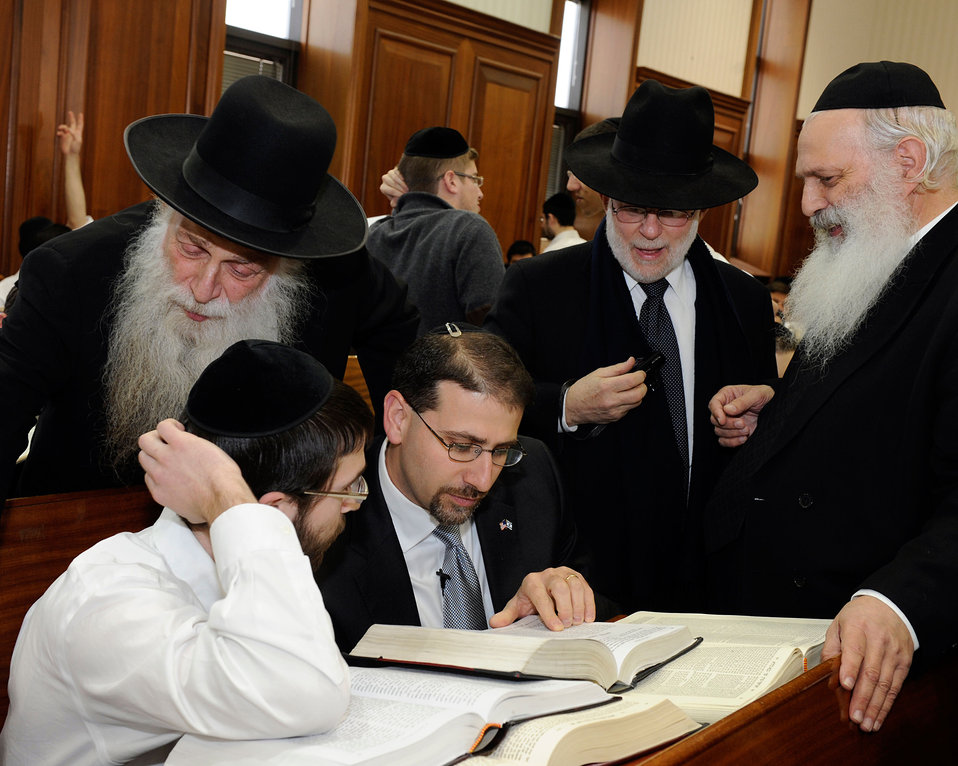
Ambassador Shapiro Visits the Mir Yeshiva

U.S. Ambassador to Israel Daniel B. Shapiro visits the Mir Yeshiva in Jerusalem, one of the largest yeshivas in the world with over 6,000 students, 1,000 of whom are from the United States, on January 10, 2012. Ambassador Shapiro is accompanied by Rabbi Aharon Chodosh, Rabbi Nachman Levovitz, Rabbi Binyamin Carlebach and Rabbi Aaron David Davis, the mashgiach ruchani, spiritual supervisor of all the students at the Mir.